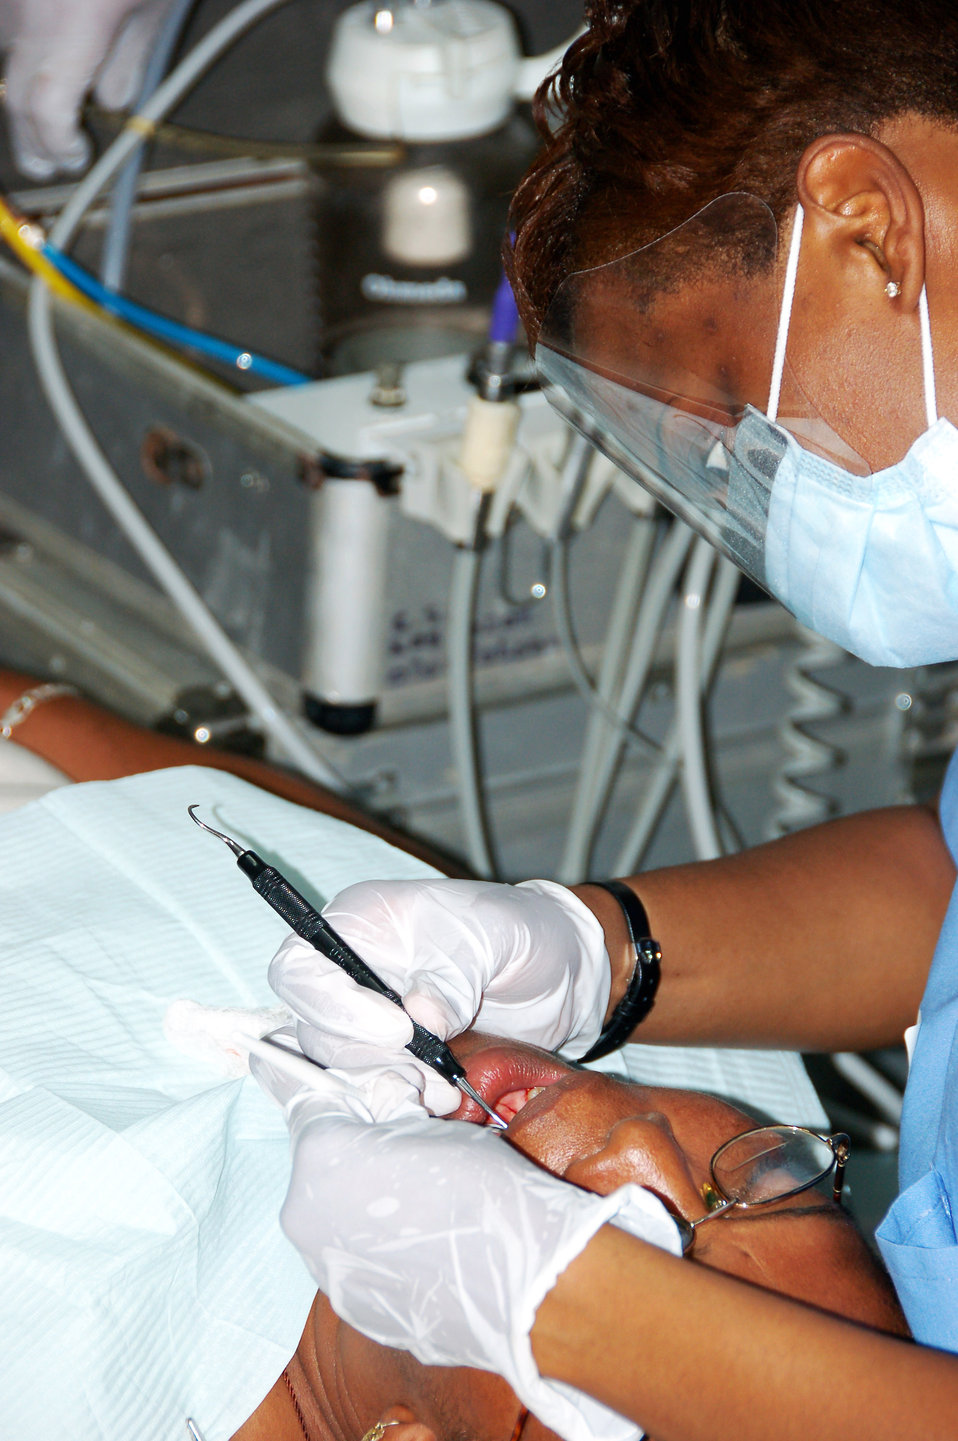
Air Force doctors take advantage of unique training

Tech. Sgt. Crystal Hagler cleans the teeth of a patient July 17 in Santa Maria, Panama, as part of a Medical Readiness Training Exercise there. The MEDRETE is a two-week long U.S. Southern Command-sponsored exercise designed to hone the skills of medical personnel while providing free health care in remote locations through partnership with host nation doctors. Approximately 2,350 patients have currently been seen by the medical staff. Sergeant Hagler is a dental technician deployed from the 42nd Medical Group at Maxwell Air Force Base, Ala.